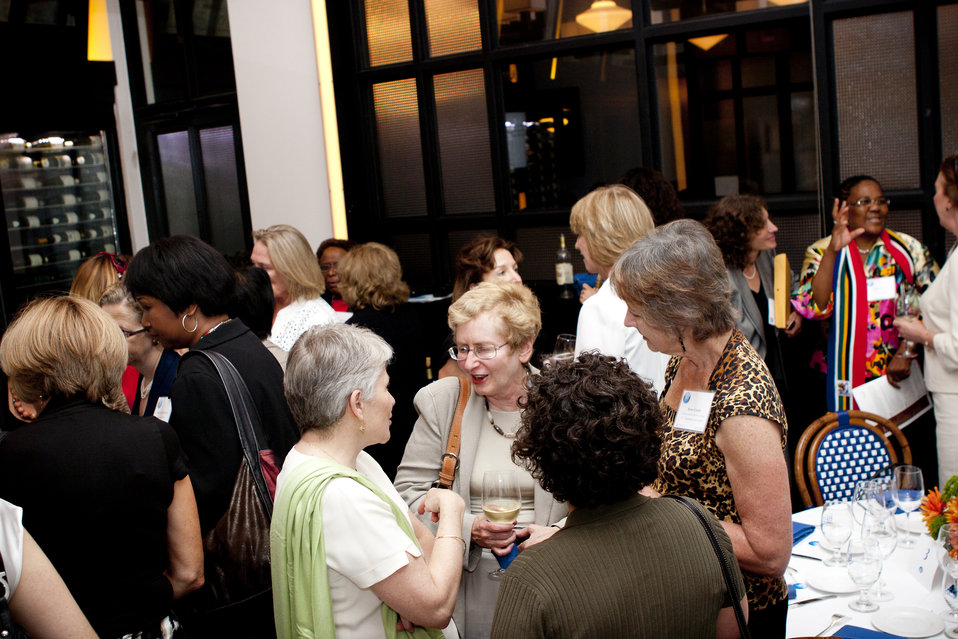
WomenandEnergy 37